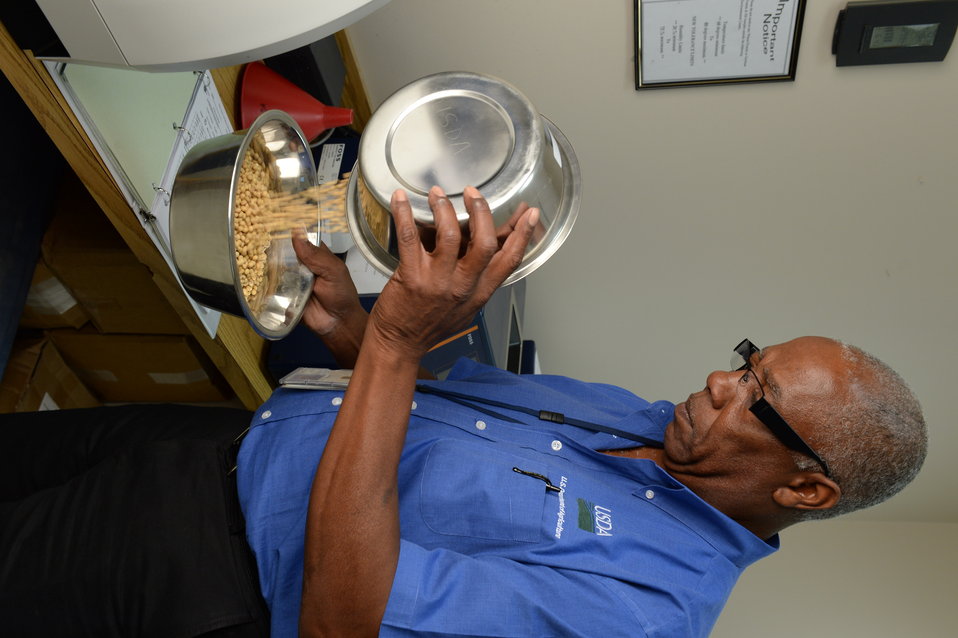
U.S. Department of Agriculture (USDA) Grain Inspection, Packers and Stockyards Administration (GIPSA) Federal Grain Inspection Service (FGIS) employee tests soybean samples at the FGIS inspection laboratory in New Orleans, LA on Monday, Nov. 18, 2013.